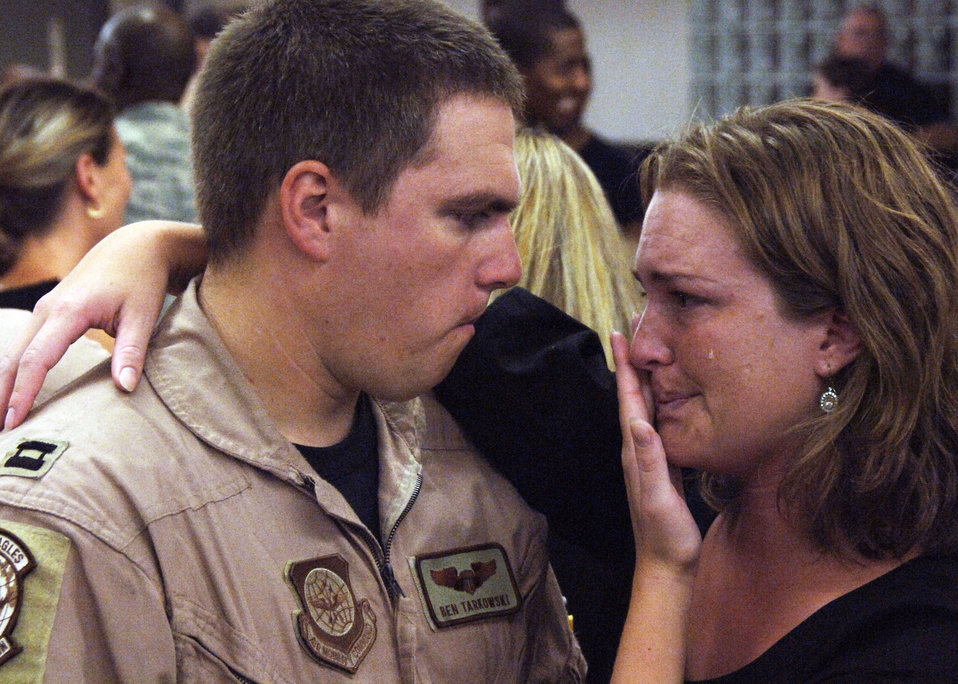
I'll miss you

Capt. Ben Tarkowski and wife, Ericka, say their goodbyes Aug. 27 at Charleston Air Force Base, S.C. Captain Tarkowski and other members of the 15th Airlift Squadron are deploying to Southwest Asia.